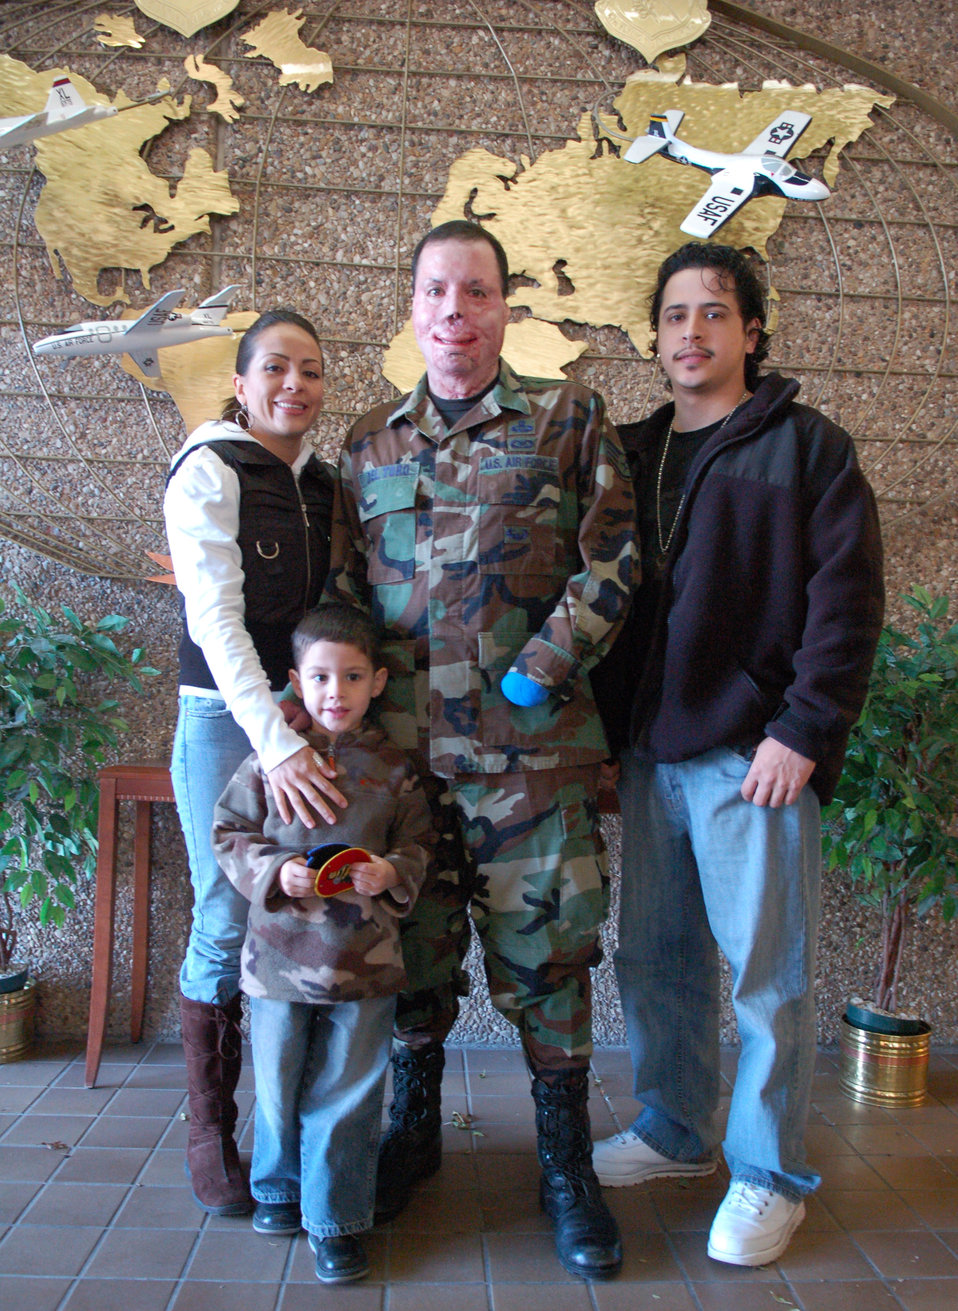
Injured TACP feels lucky to serve

Staff Sgt. Israel Del Toro, supported by his wife Carmen, son Israel and brother Angel Del Toro, continues to recover after being severely injured by an improvised explosive device during a mission in Afghanistan. Sergeant Del Toro is a tactical air control party Airman.